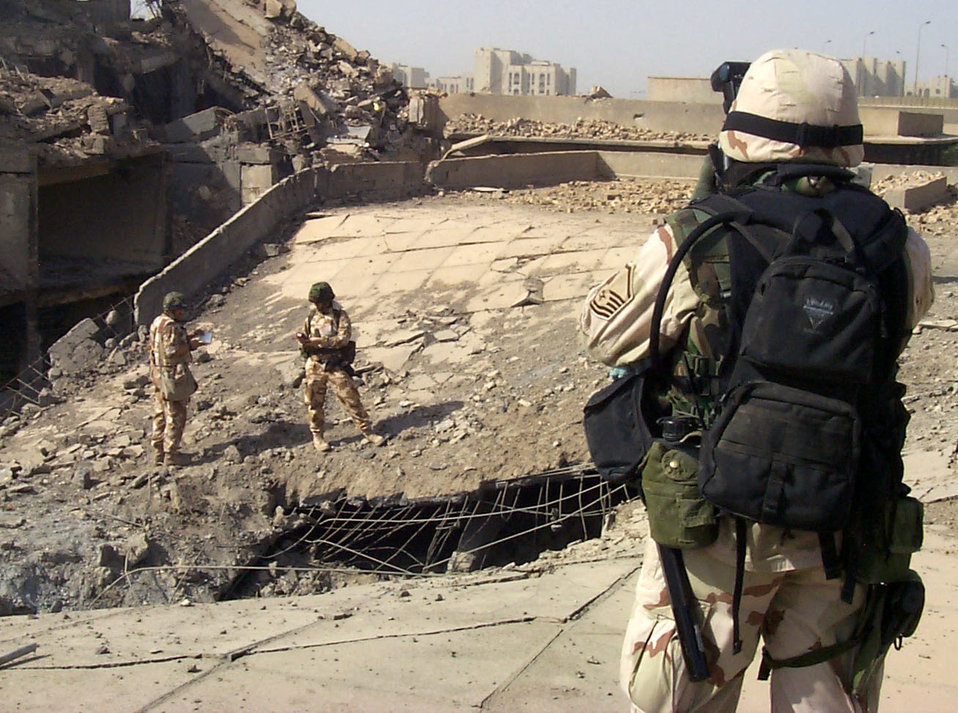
Combat camera on the job

BAGHDAD, Iraq -- Members of the Combined Weapons Effectiveness Assessment Team collect information as Master Sgt. Michael Best, foreground, photographs an impact point where a coalition weapon entered the top of an Iraqi Ministry of Defense building here. Best is a combat-camera photographer deployed from Charleston Air Force Base, S.C.